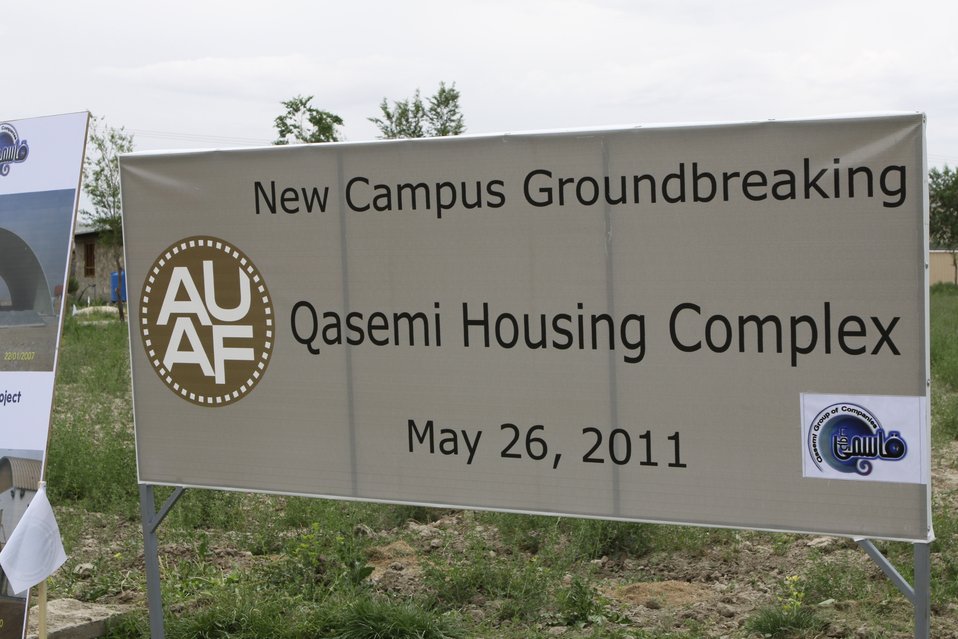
100526 AUAF Graduation 395